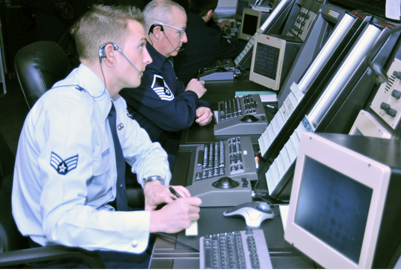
New radar systems

Senior Airman Jacob Tucker and Master Sgt. Jae Ewing monitor aircraft Nov. 22, 2010, in the Radar Approach Control facility at Royal Air Force Lakenheath, England. They are using new Standard Terminal Automation Replacement System equipment recently installed as part of a replacement program under the Air Force Electronic Systems Center and the Federal Aviation Administration. Airman Tucker is an air traffic control journeyman with the 48th Operation Support Squadron, and Sergeant Ewing is the 48th OSS senior watch supervisor.